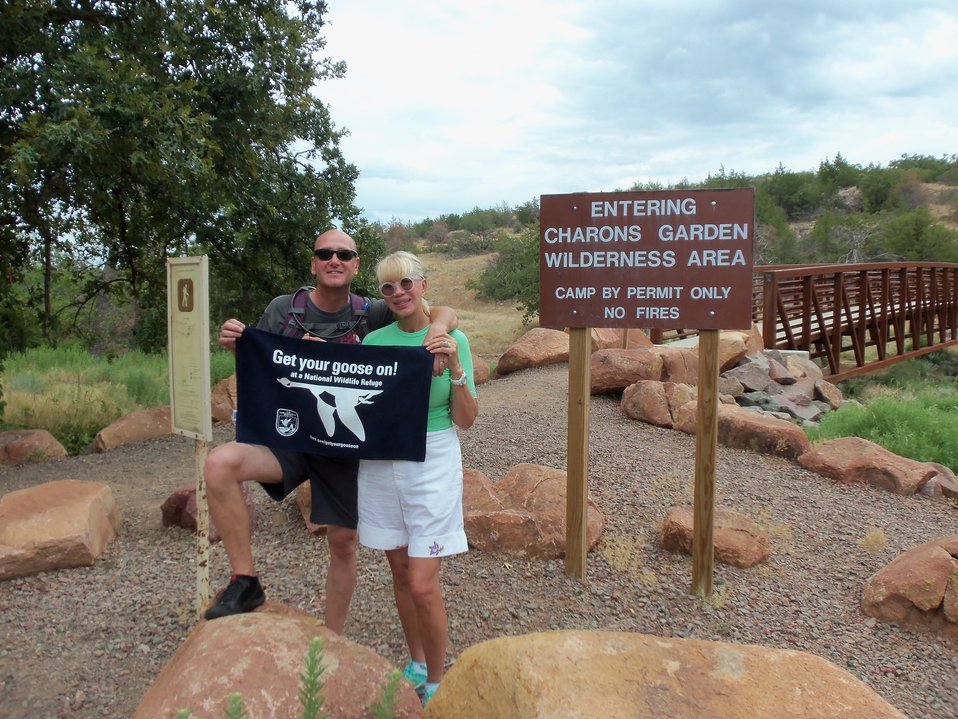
Get Your Goose On!

Wichita Mountains National Wildlife Refuge in Oklahoma.